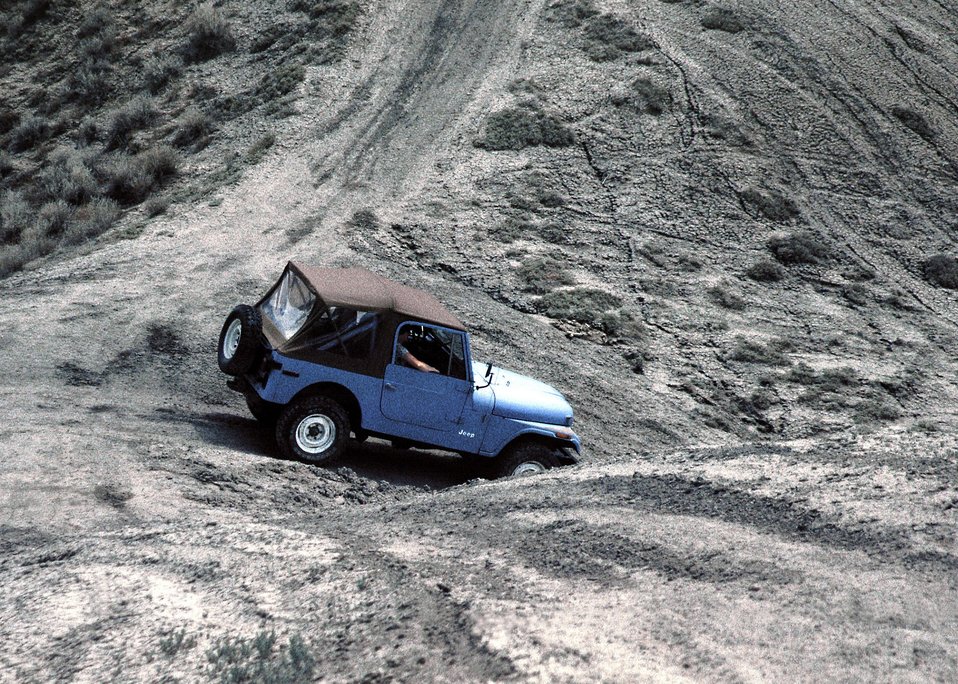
Four Wheel Driving